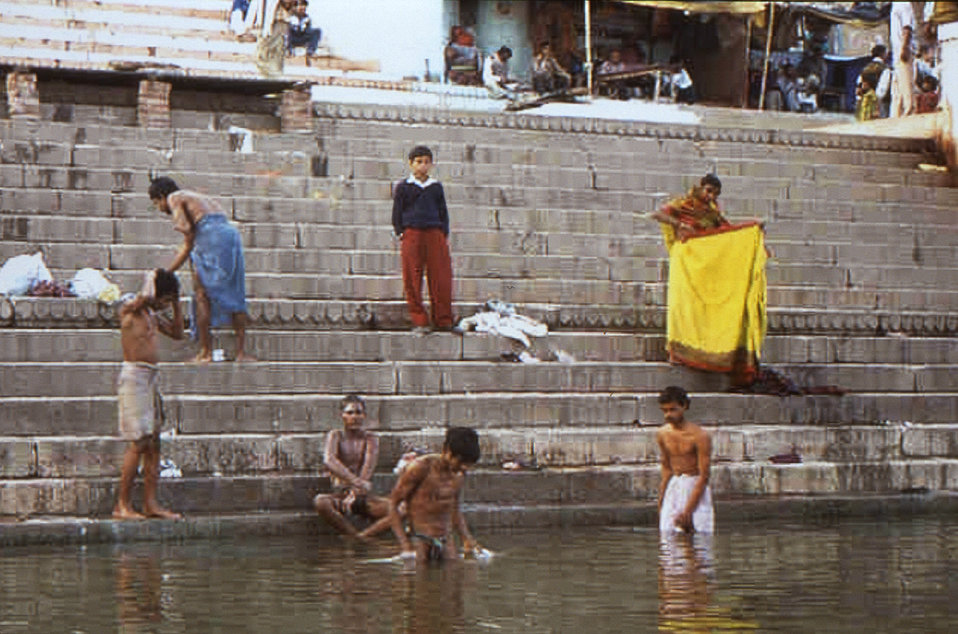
The Indian city of Varanasi is situated on the banks of the sacred Ganges River, and is one of the holiest places in India. On a daily basis, people frequent the steps, or ghats along the Ganges River. This image was captured from a Ganges riverboat as the river passed through the city, which has been a center of learning and civilization for over 2000 years, and claims to be one of the oldest cities in the world. It is to the riverbank ghats that pilgrims flock in order to bath in the Ganges River's holy waters. It is through this bathing ritual that one may be absolved from all sins. This photograph was provided by Chris Zahniser, B.S.N., R.N., M.P.H., a STOP Transmission of Polio (STOP) immunization initiative team member and photographer who was assigned to the state of Uttar Pradesh in northern India, and spent three months working in the Districts of Gorakhpur and Deoria.